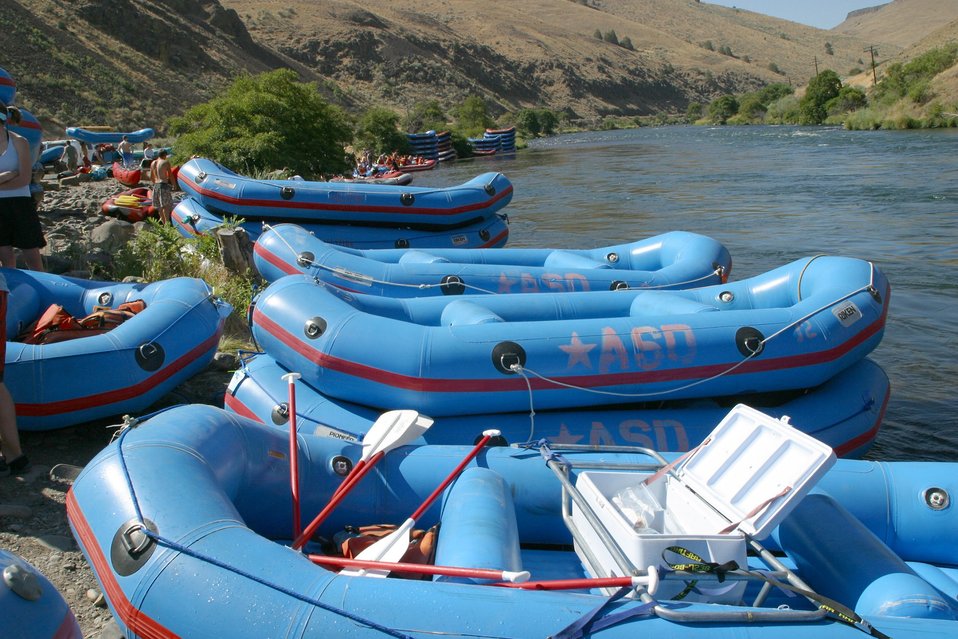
Over 200,000 people a year float the Lower Deshutes River.